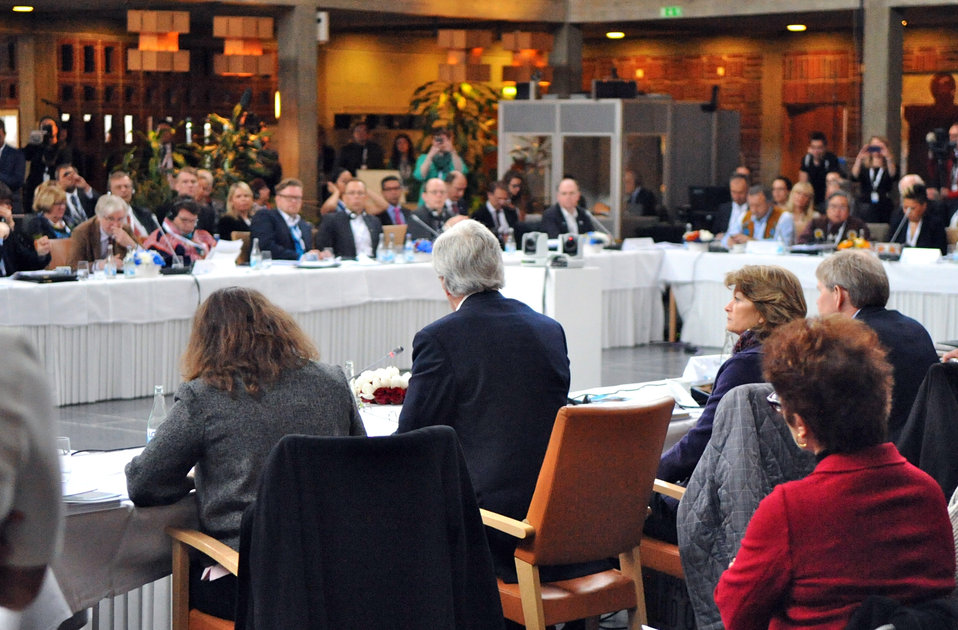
Secretary Kerry Addresses the Eighth Arctic Council Meeting

U.S. Secretary of State John Kerry addresses the Kiruna Ministerial Meeting of the eighth annual Arctic Council meeting at the City Hall in Kiruna, Sweden, on May 15, 2013.